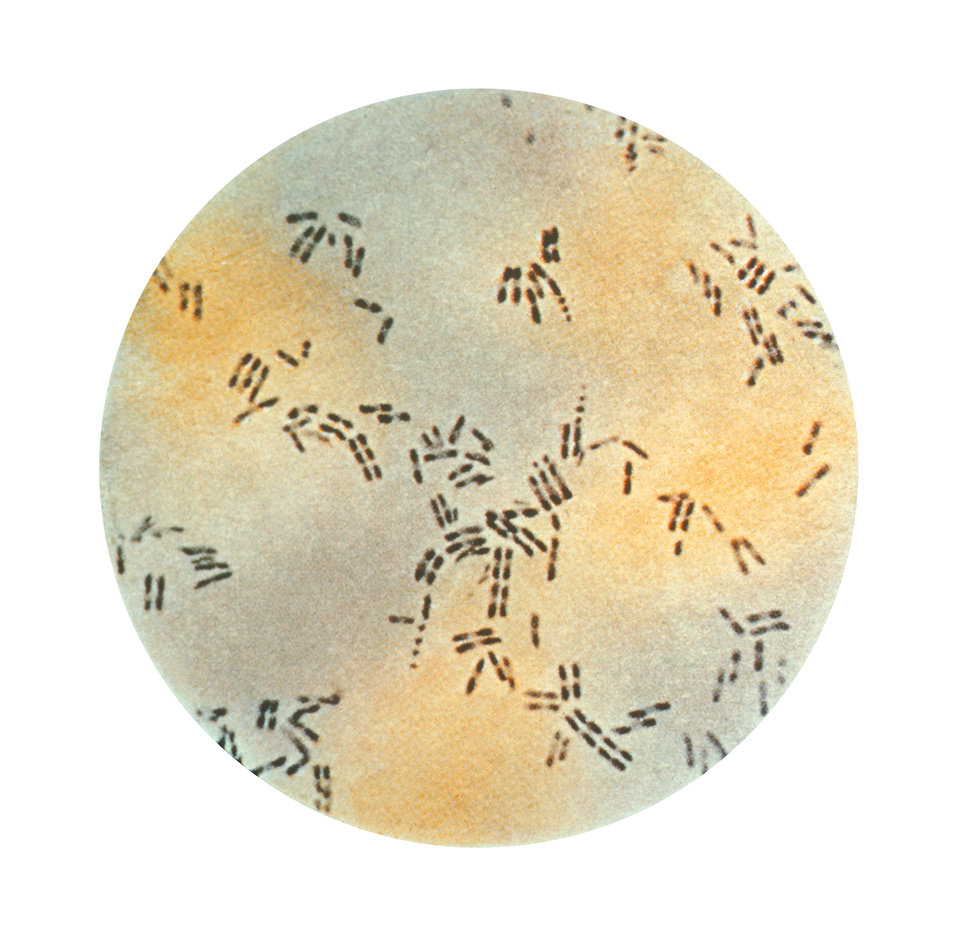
A photomicrograph of Corynebacterium pseudodiphtheriticum bacteria using the Gram stain technique.